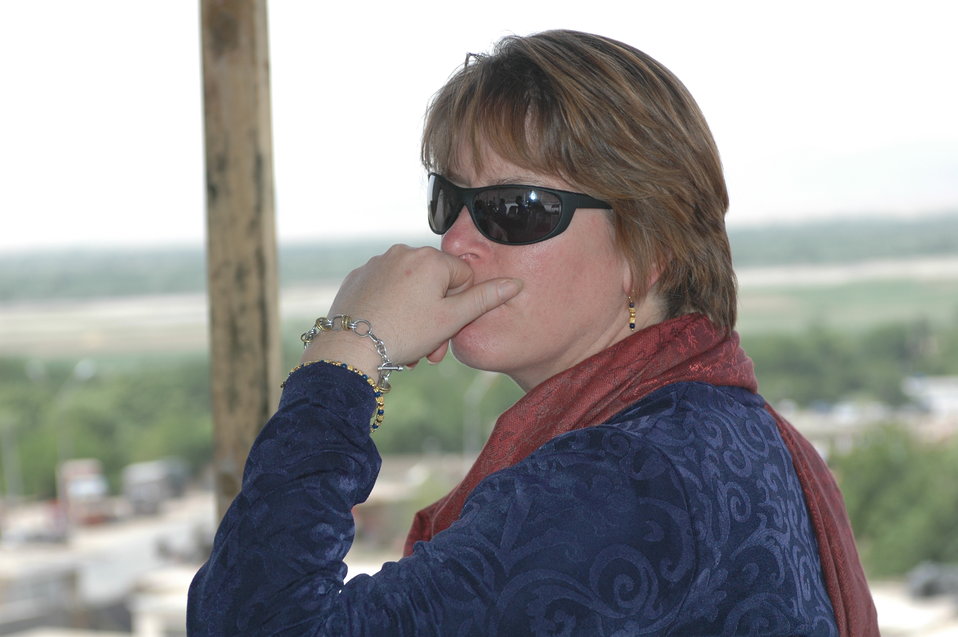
Dr Shah Visits Kandahar April 9, 2010